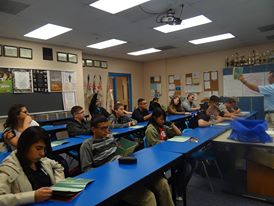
Buena High School JROTC in Arizona shattered the myths on National Drug Facts Chat Day. They used the booklet 'Shatter the Myths' to talk about the acts about drugs and participated in the Chat Day on January 28, 2014.